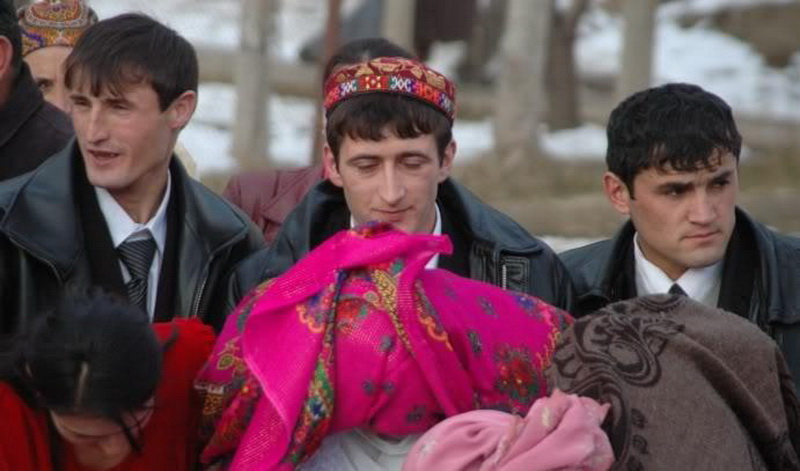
Pamiri Tajiks